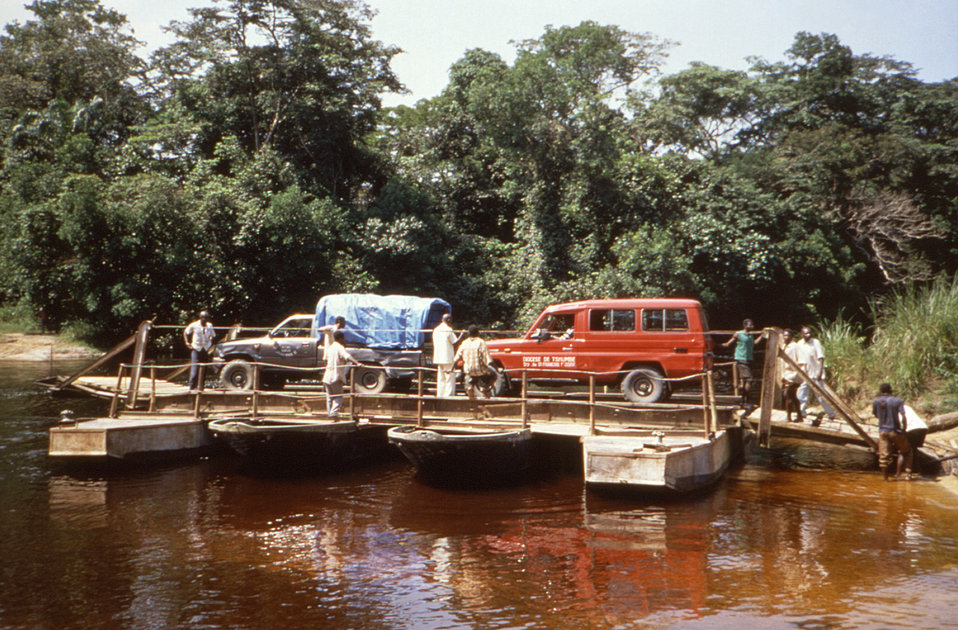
This image was created during an investigation into an outbreak of monkeypox, which took place in the Democratic Republic of the Congo (DRC), 1996 to 1997, formerly Zaire. This particular view depicted a number of villagers and vehicles, as they were in the process of crossing a pontoon bridge within the Katako-Kombe Health Zone, of the DRC.